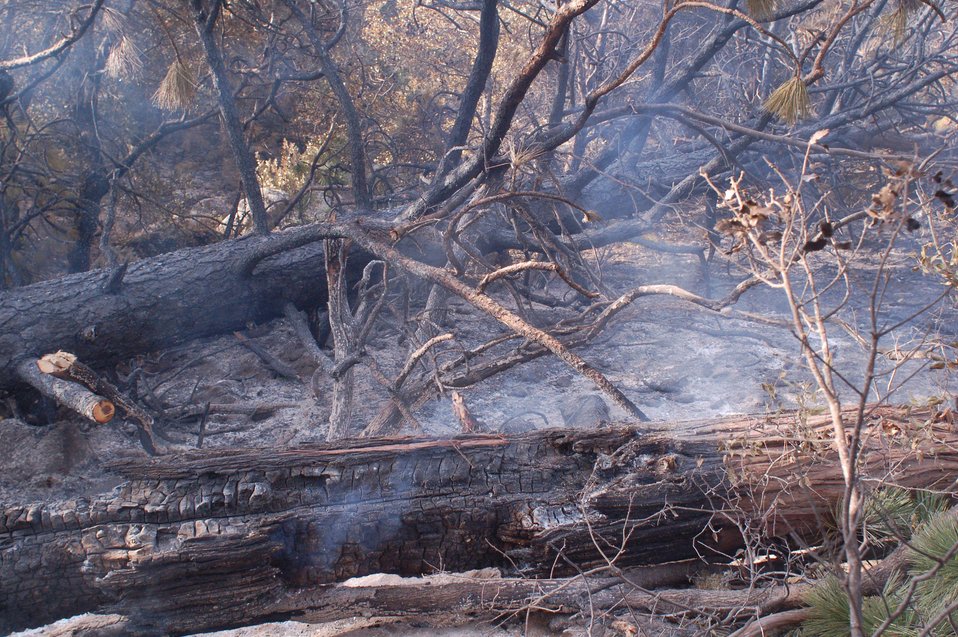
The burned and charred remains of heavy growth and fallen trees at the Power Fire in California. The Power Fire in the Stanislaus National Forest near Beardsley Reservoir in California began on Aug. 5, 2013 is under investigation. The fire has consumed 881 acres and is 32% contained.